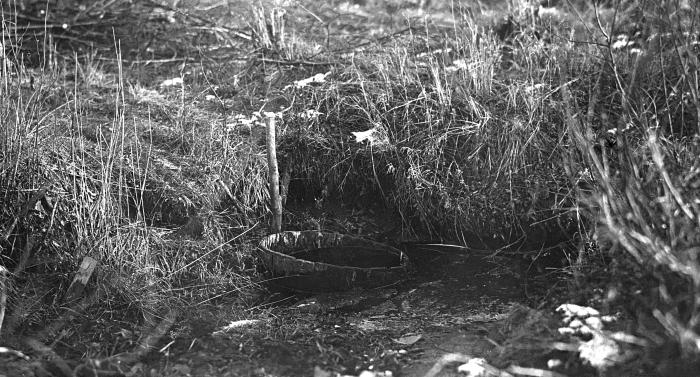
This March, 1917 historic photograph depicted a polluted fresh-water spring that was located in the vicinity of Ironton, Minnesota. The focus of the image was to show the surrounding area, and to impress upon the viewer the need to keep the adjacent area clean, so that the stream water could be used as a source of potable water.